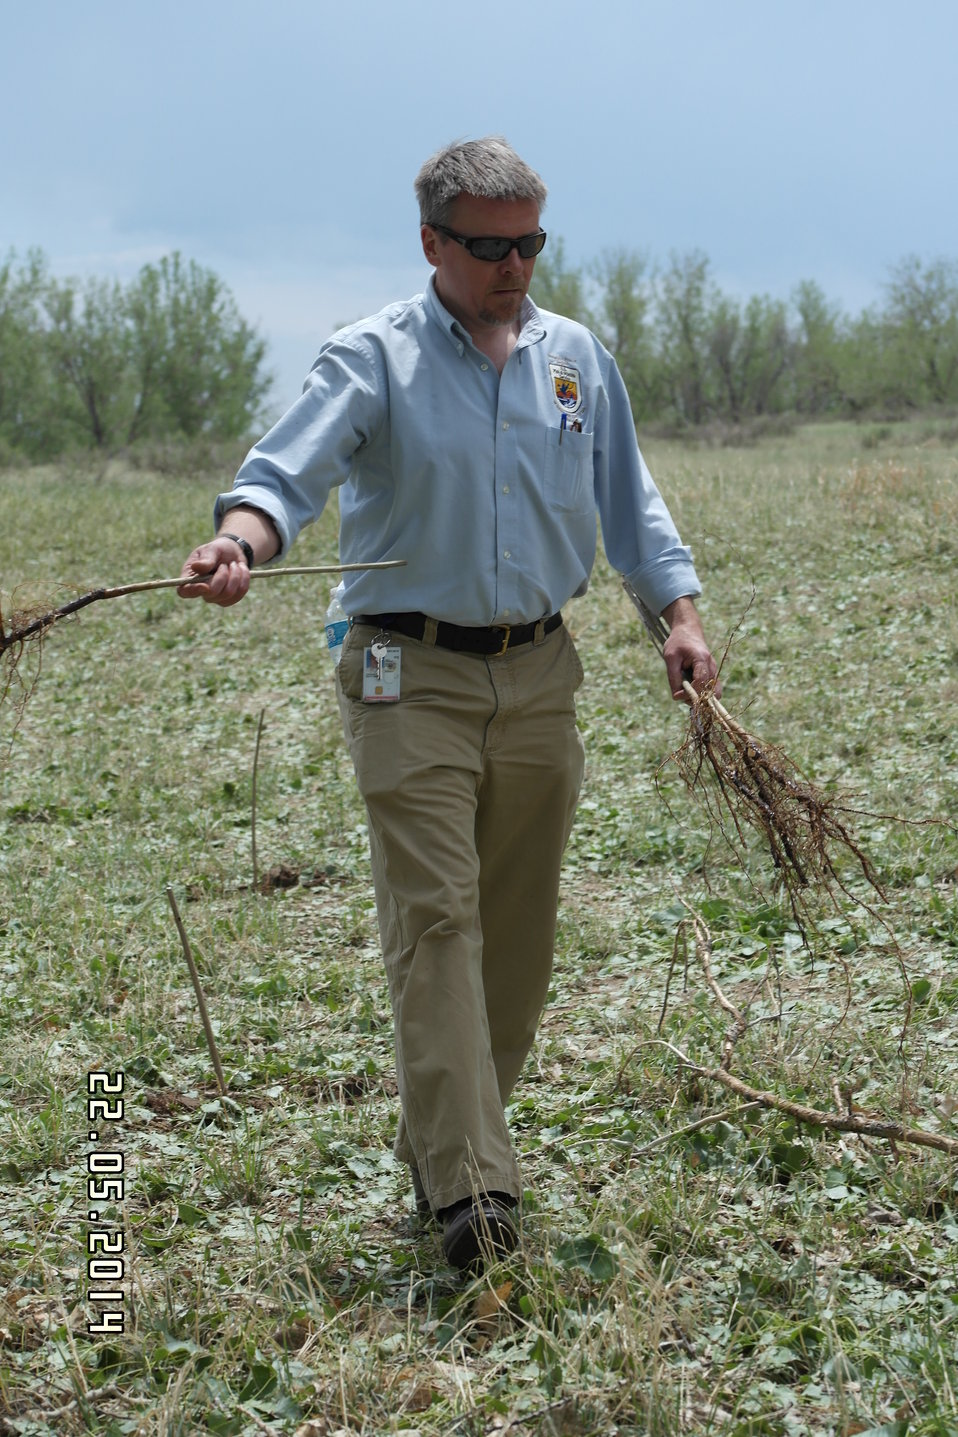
Deputy Regional Director Matt Hogan Planting Trees

Jewell made the announcement at an event at Rocky Mountain Arsenal National Wildlife Refuge outside Denver, Colorado, where she was joined by U.S. Department of Agriculture (USDA) Deputy Under Secretary for Natural Resources and the Environment Arthur “Butch” Blazer; Greg Knadle, Vice President for Government Relations of the National Fish and Wildlife Foundation (NFWF); Refuge Manager David Lucas and youth corps members of Groundwork Denver.